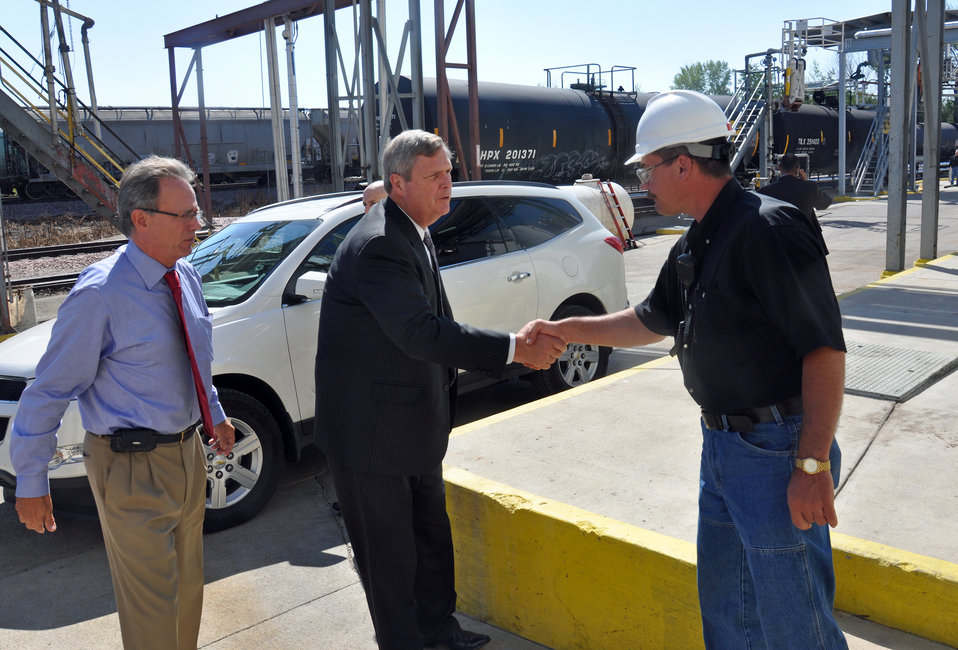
Agriculture Secretary Tom Vilsack shakes hands with AGP Biodiesel plant manager Kelly Croghan before touring the control room and quality testing lab at AGP’s biodiesel plant in Sergeant Bluff, IA on Sept. 14, 2012. AGP Senior Vice President for Renewable Fuels, John Campbell looks on.